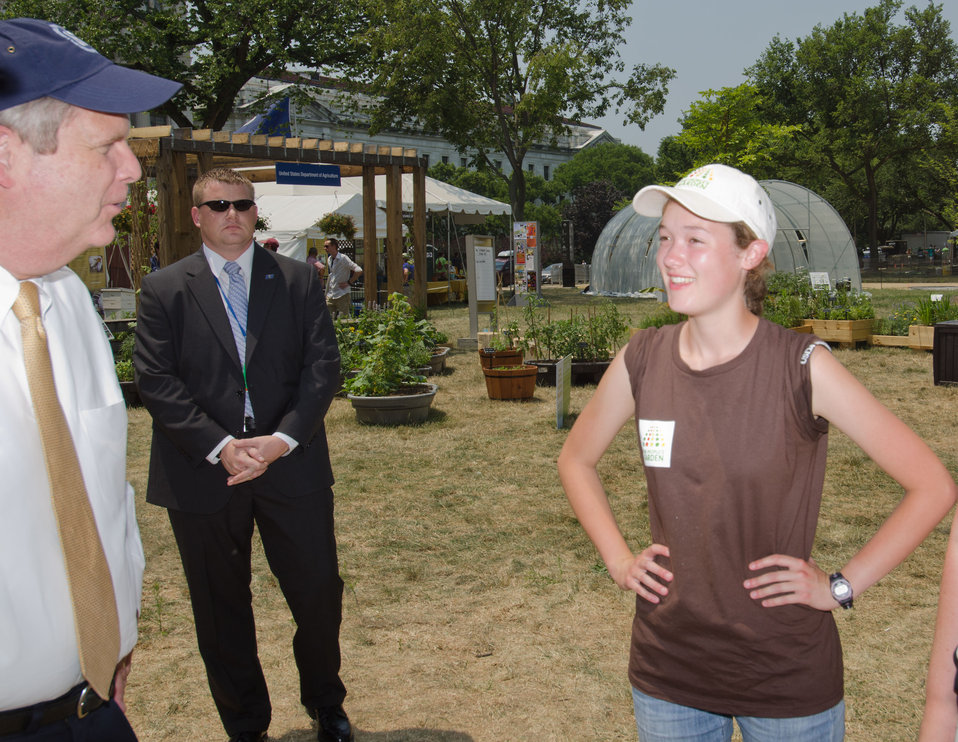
Agriculture Secretary Tom Vilsack chats with a People’s Garden volunteer near their display of affordable, sustainable and adaptable gardens at the Campus and Community themed section of the 2012 Smithsonian Folklife Festival, on the National Mall in Washington, D.C. on Friday, June 29, 2012 Near by is the Mississippi State University Mobile Veterinary Clinic that serves the Northern Mississippi area by providing Spay and neuter services to those in need, and provides medical experience for students. One of the three themes this year is “Campus and Community.” It celebrates the 150 years of the USDA and the Land-Grant University System. The U.S. Department of Agriculture (USDA) and the Land-Grant system extend education across the country, contributing to American agriculture success and rural prosperity. “Campus and Community” has demonstrations, discussions, hands-on activities, and entertainment to that showcase the many ways that this partnership works to improve American agriculture and rural life.